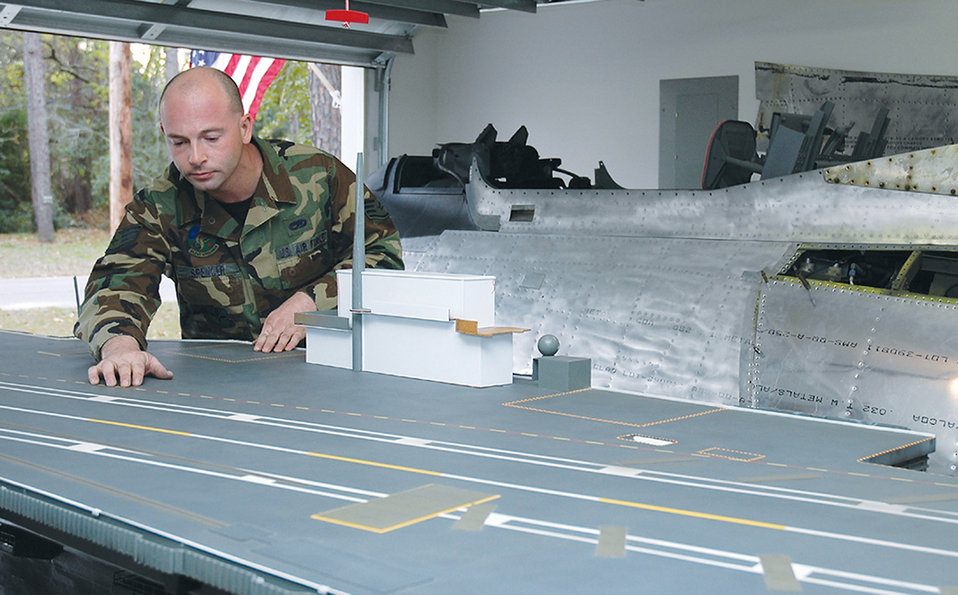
Detail, detail, detail

CALLAWAY, Fla. (AFPN) -- Staff Sgt. Ryan Spencer, 325th Maintenance Squadron aircraft structural maintenance journeyman, sets part of the runway lines on his model of the USS Independence at his house. Once complete, the model will be on display at the National Museum of Navel Aviation at Naval Air Station Pensacola, Fla.